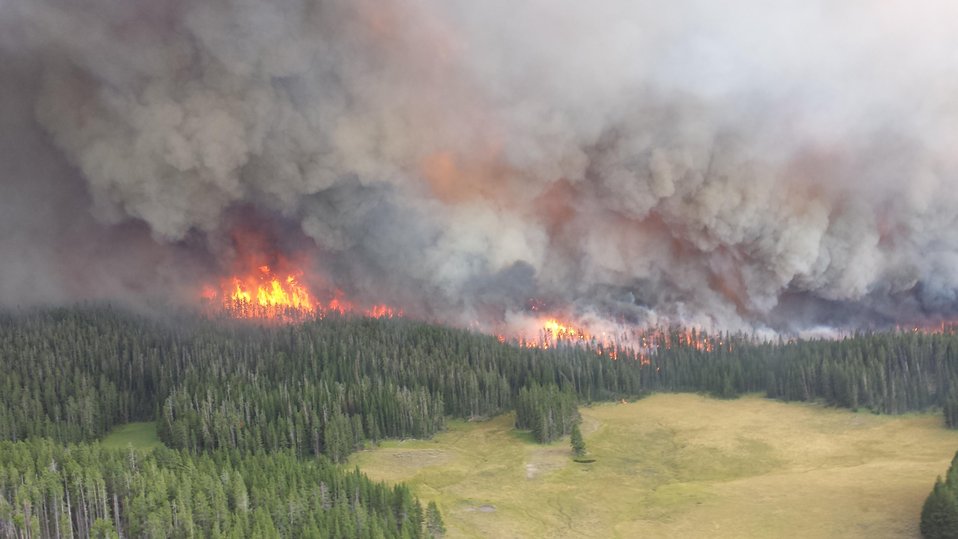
The Druid Complex Fire in Yellowstone National Park in Wyoming began on Aug. 13, 2013 by lighting has consumed approximately 11,658 acres.